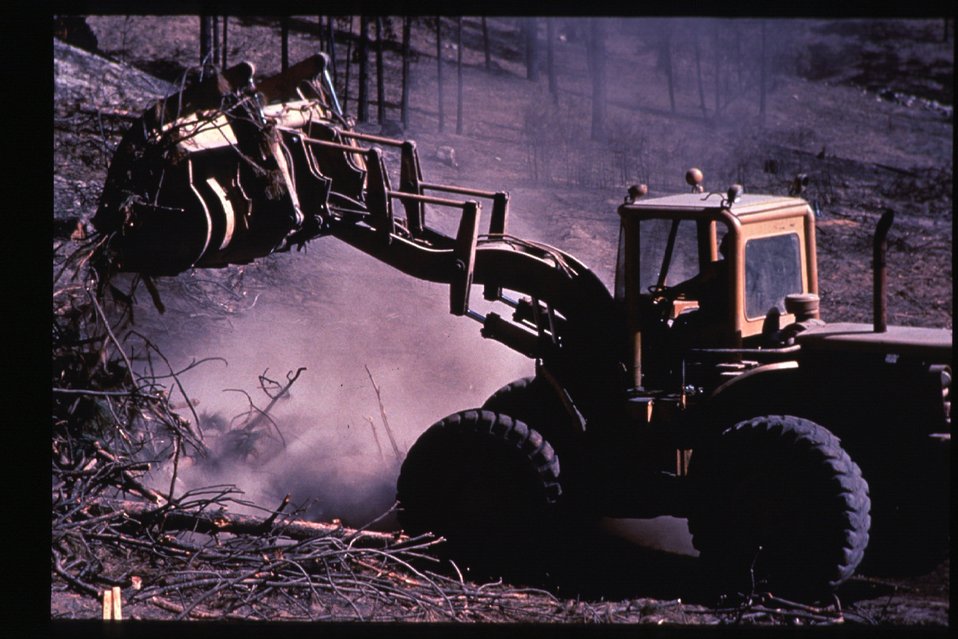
Boise Foothills Fire Danskin Mountains and South Fork of Boise River Heavy equipment Four River Field Office LSRD Lower Snake River District